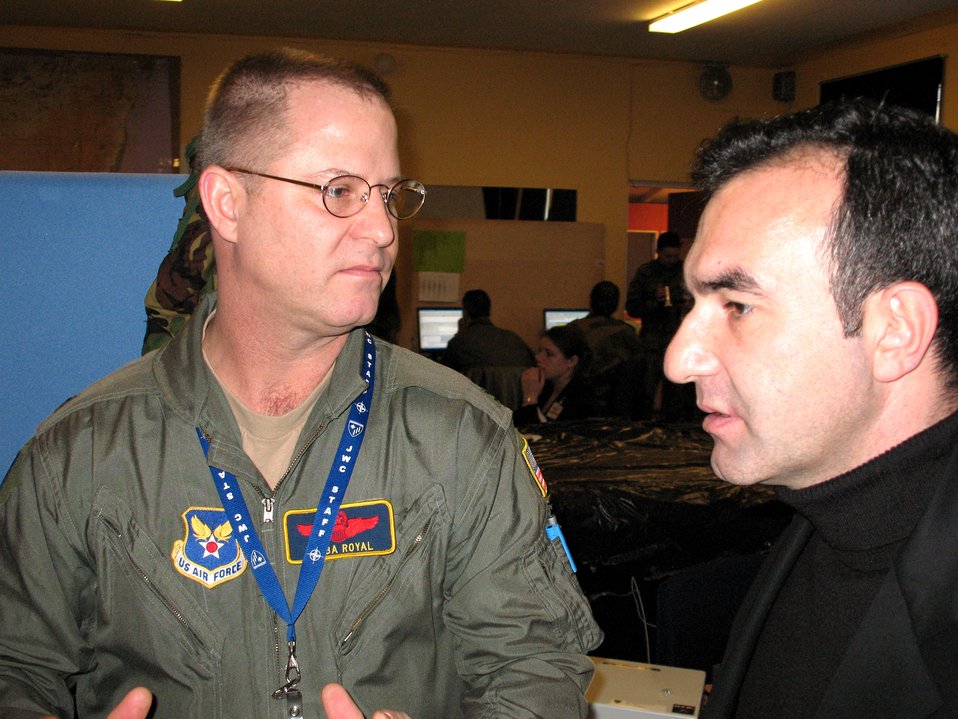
Joint Warfare Center tests new tools during exercise

Col. David Royals talks to Yavuz Okur during Exercise Enabler 2007 March 28 at Ramstein Air Base, Germany. The exercise tested new tools for upcoming JWC exercises. Colonel Royals is an Air Doctrine staff officer at the Joint Warfare Center in Stavanger, Norway. Mr. Okur is a computer systems analyst.